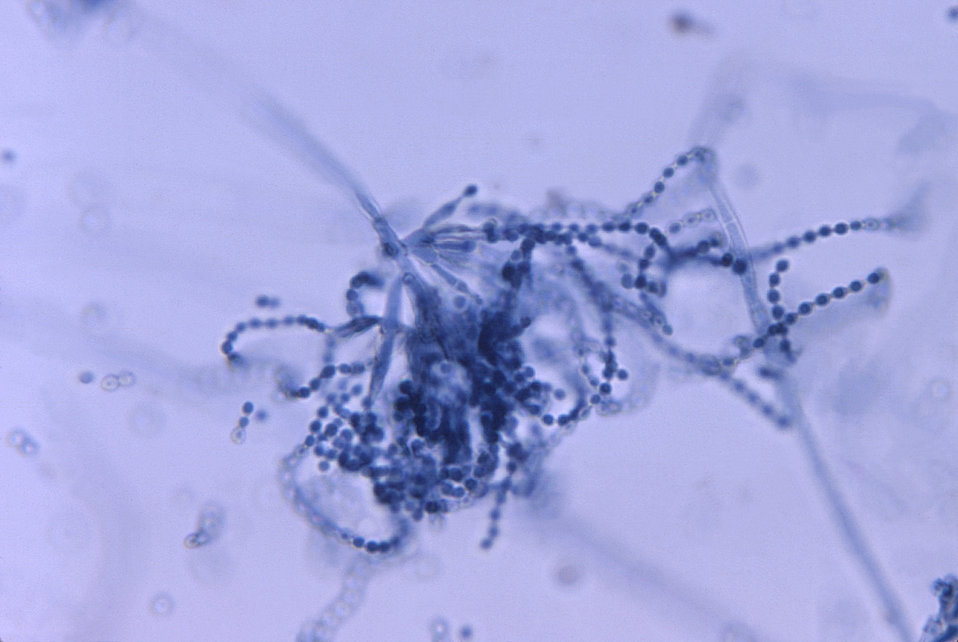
These are conidiophores with conidia of Penicillium marneffei that were isolated from a splenic abscess.